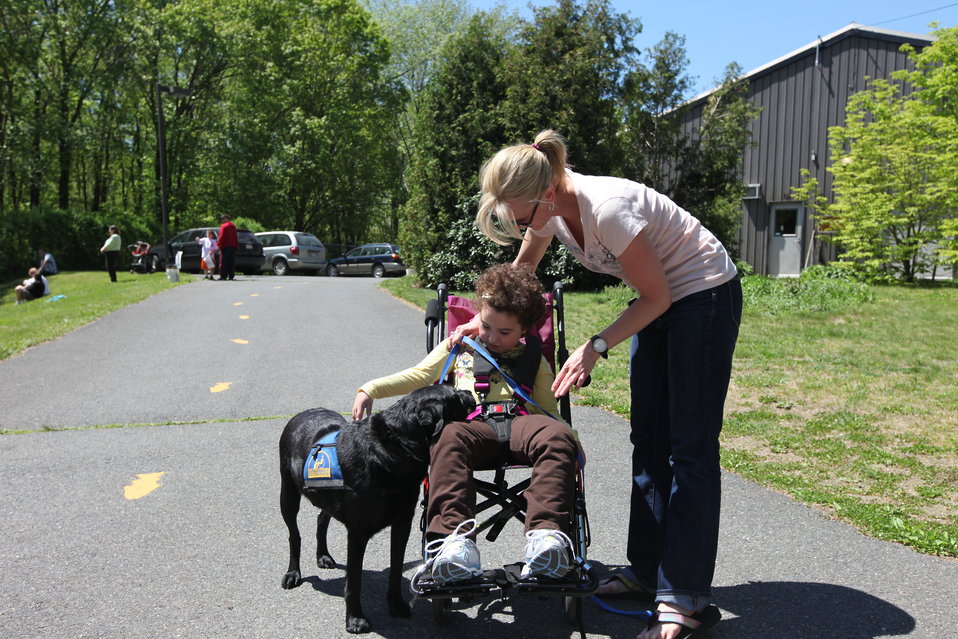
Youth Fishing Derby 2012

Megan Nagel/USFWS